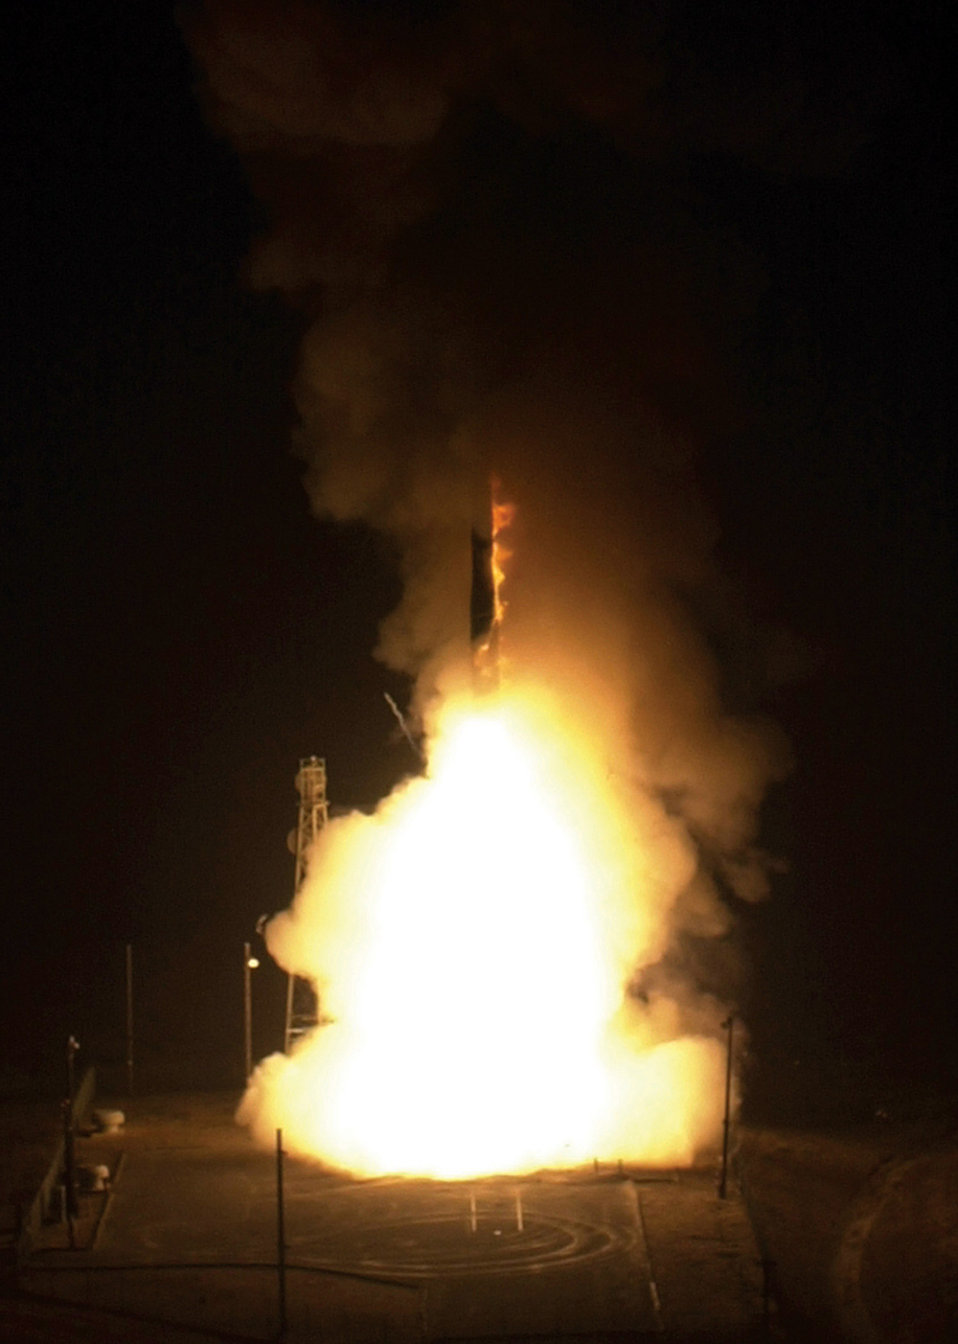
Vandenberg launches Minuteman III

VANDENBERG AIR FORCE BASE, Calif. -- An unarmed Minuteman III intercontinental ballistic missile launches from here Aug. 26. The launch demonstrates the ability to integrate a safety enhanced re-entry vehicle into the existing Minuteman III weapons system.